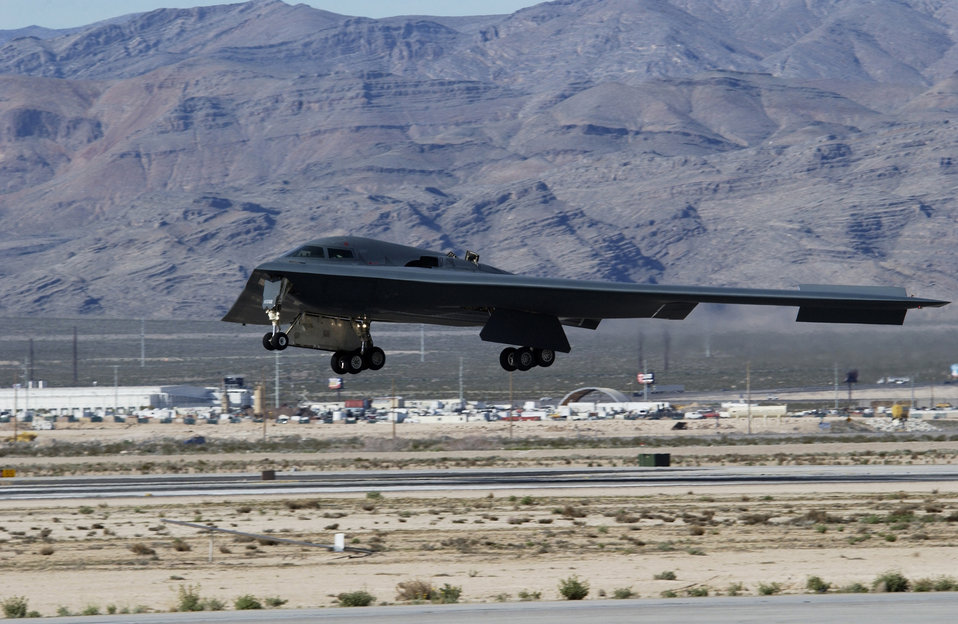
Spirit landing

NELLIS AIR FORCE BASE, Nev. -- A B-2 Spirit bomber comes in for a landing here March 1. The B-2 is assigned to the 509th Bomb Wing at Whiteman AFB, Mo.